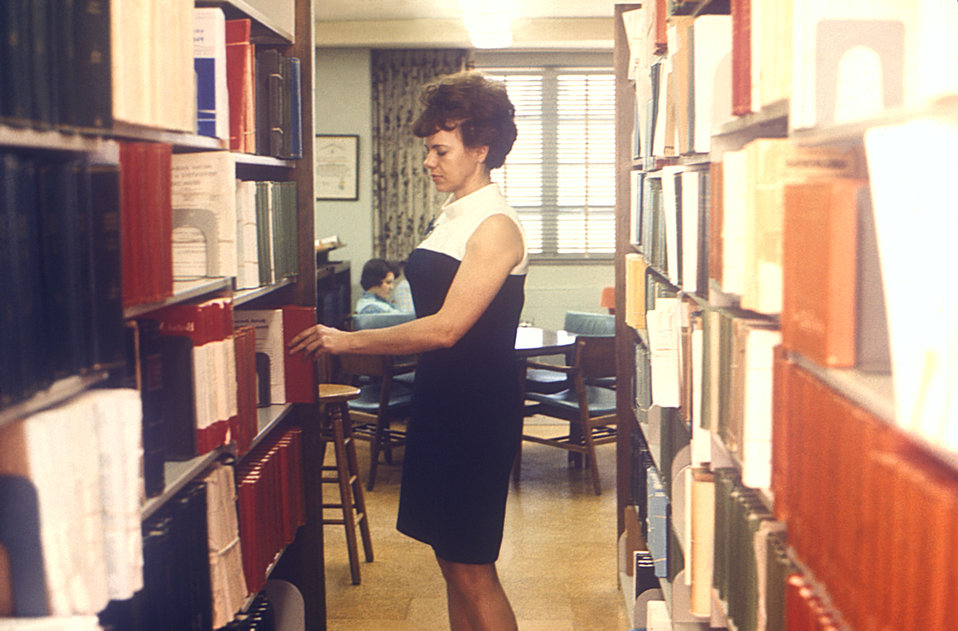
This 1970 photograph depicts librarian, Evelyne Coggins, as she was organizing shelved library books in the Centers for Disease Control and Prevention's (CDC) Public Health Library and Information Center (PHLIC) located on the Roybal Campus of the CDC's Atlanta, Georgia headquarters, which was formerly located in Building 1, but has since been moved to the Tom Harkin Global Communications Center, otherwise known as Building 19.